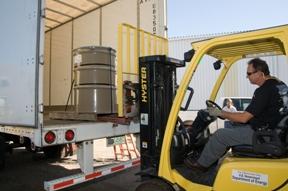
Savannah River Site tritiated oil drums

R.E. Rollins moves a palette of tritiated oil drums out of the Savannah River Site's Mixed Waste Storage Building onto the truck. The truck is heading to DSSI in Kingston, Tenn., where the oil will be treated for disposal.